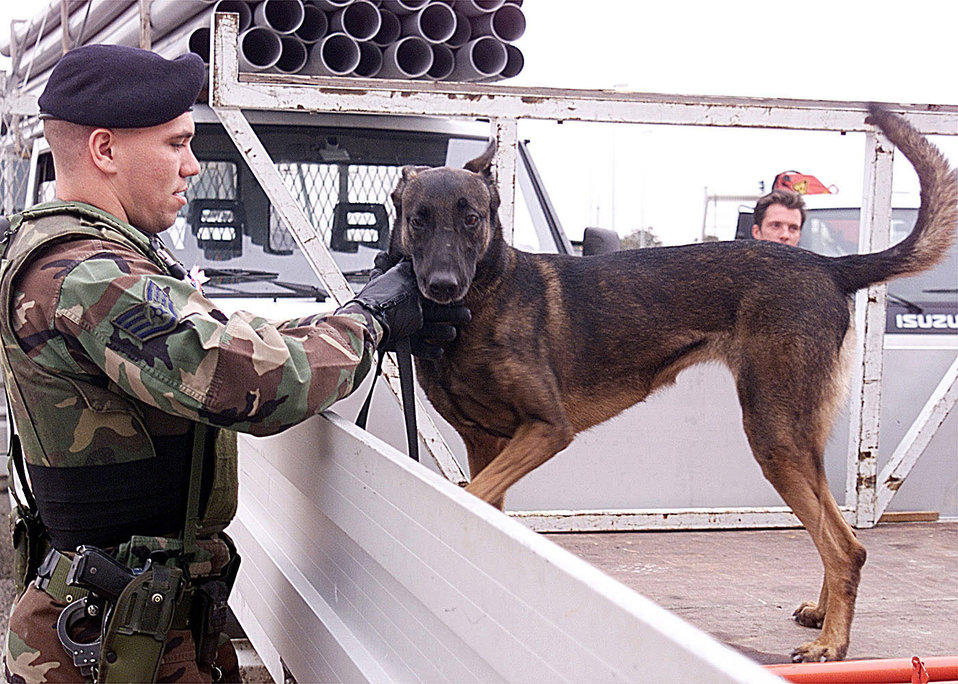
Random search

OPERATION ENDURING FREEDOM (AFIE) -- Staff Sgt. Dominic Vecchi, a military working dog handler from the 31st Security Forces Squadron at Aviano Air Base, Italy, and his dog, Layca, search for explosives during a random vehicle search awareness at an operating location in support Operation Enduring Freedom. Explosives detection is conducted because of increased levels of force protection on military installations.